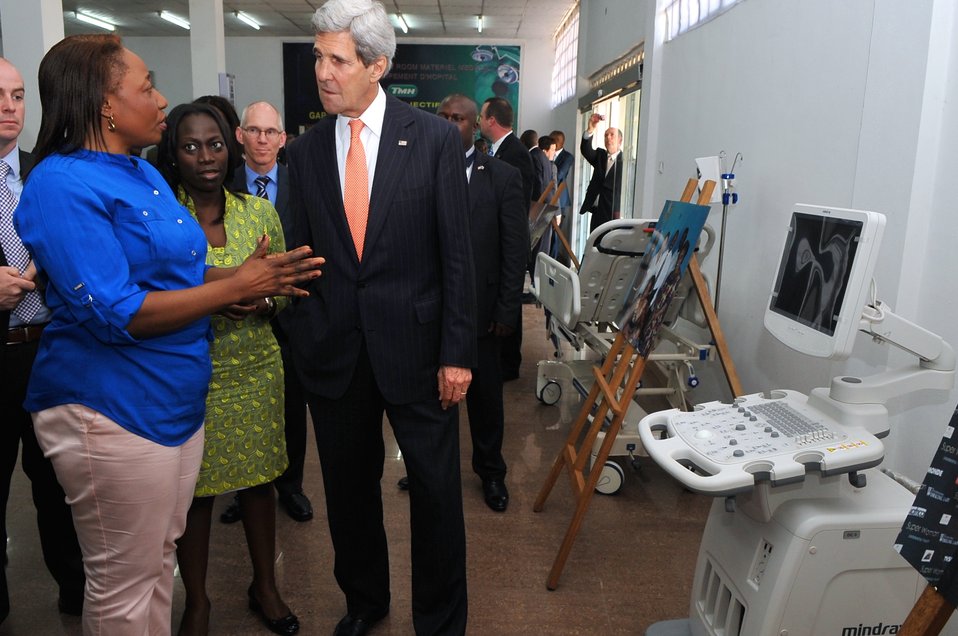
Democratic Republic of Congo Woman Tells Secretary Kerry How Microfinance Program Helped Her Business

Irene Mpoy explains to U.S. Secretary of State John Kerry microfinance assistance to women like her given by Patricia Nzolantima, center, allowed them to start medical supply stores like the one he toured in Kinshasa on May 3, 2014.